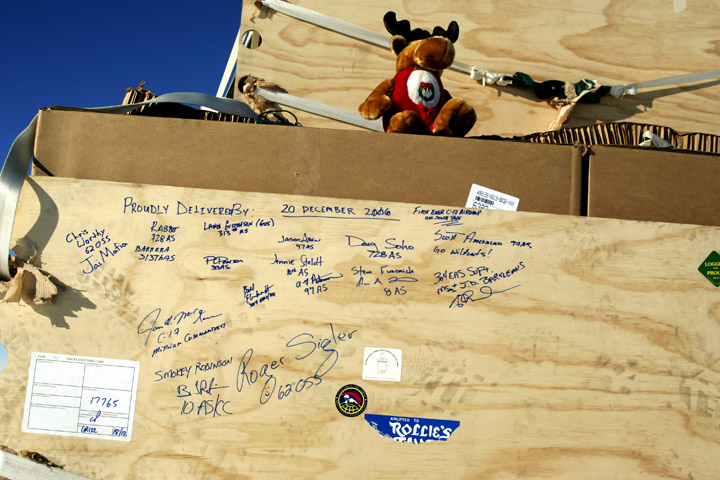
C-17 makes its first South Pole airdrop

An autographed cargo pallet sits in the snow after being airdropped from a C-17 Globemaster III Dec. 20 to members of the National Science Foundation wintering in the Antarctic. Airmen from the 62nd and 446th Airlift Wings at McChord Air Force Base, Wash., delivered 70 tons of supplies to the team. The mission was a